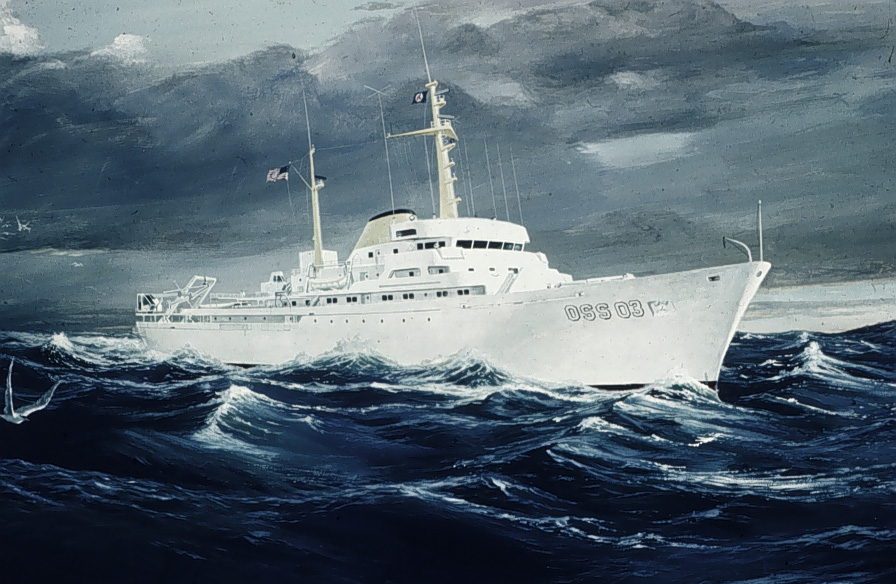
NOAA Ship MALCOLM BALDRIGE.